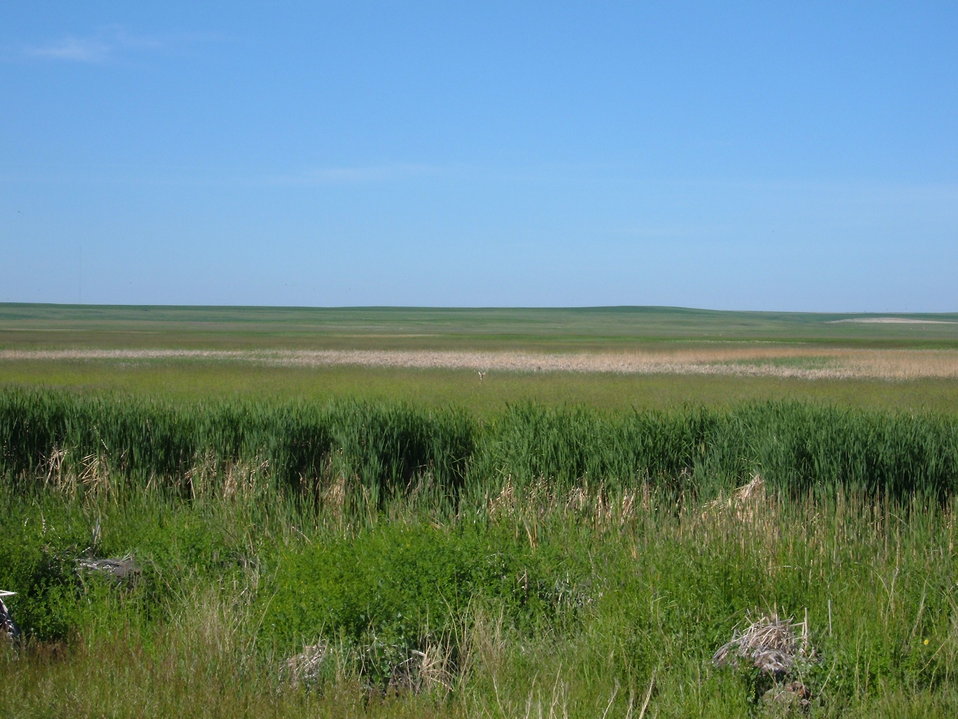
White-tailed Deer (Odocoileus virginianus)

If you look really closely you can see the head of a White-tailed deer peeking out through the cattails!